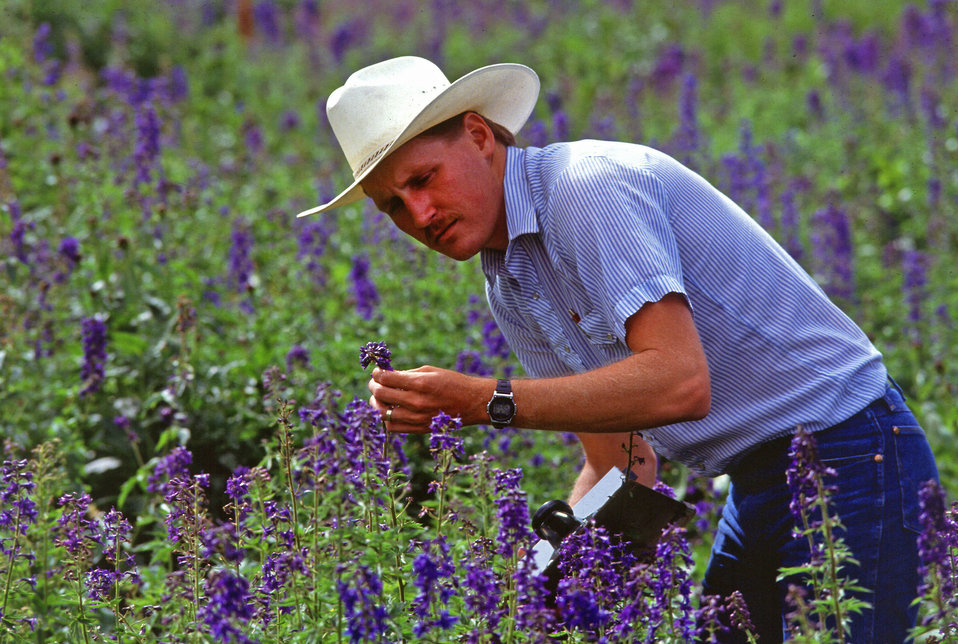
U.S. Department of Agriculture (USDA) Agricultural Research Service (ARS) range technician Gus Warr collects larkspur samples to measure alkaloid levels on high mountain rangelands in central Utah.